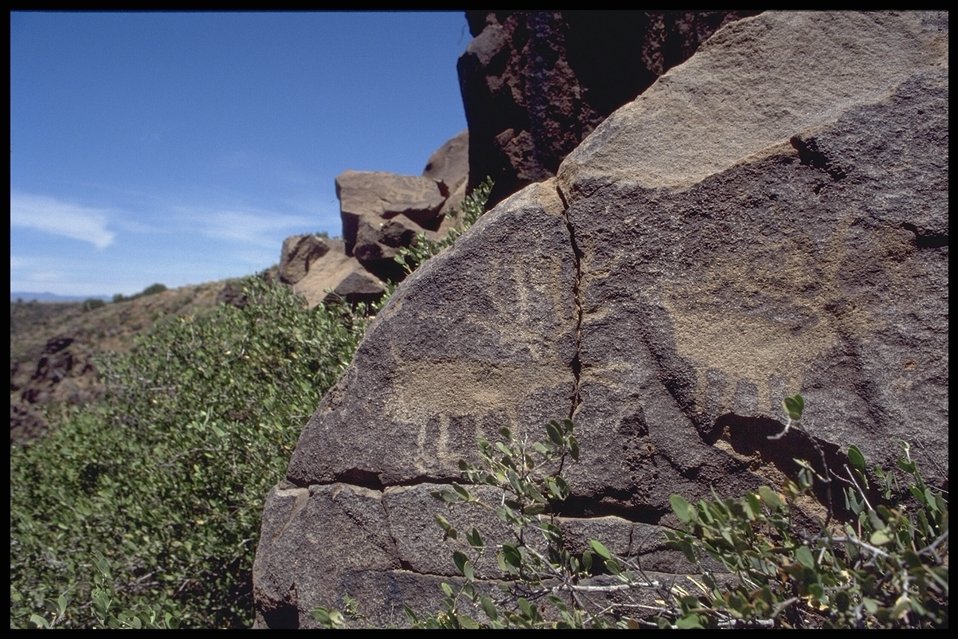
Petroglphs (Rock Art) can be found throughout the 71,000 Acres that make up the Agua Fria National Monument.